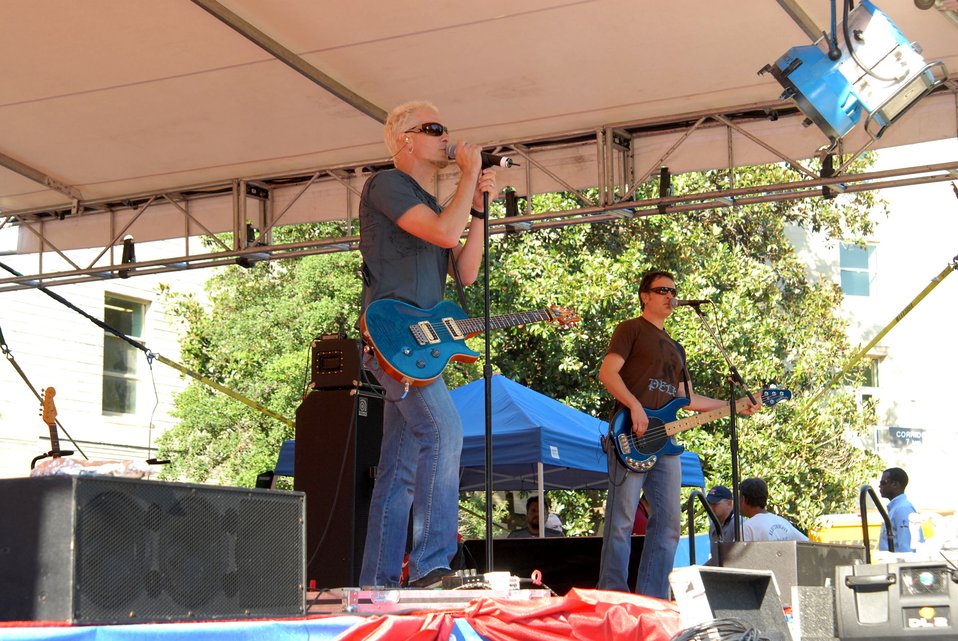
Band rocks Pentagon on Air Force's 60th birthday

Twin brothers Alan and Rob Schaefer of the rock band Five Star Iris practice for their Air Force 60th birthday performance inside the Pentagon courtyard Sept. 17 in Arlington, Va. The band recently finished an Armed Forces Entertainment tour in Southwest Asia.